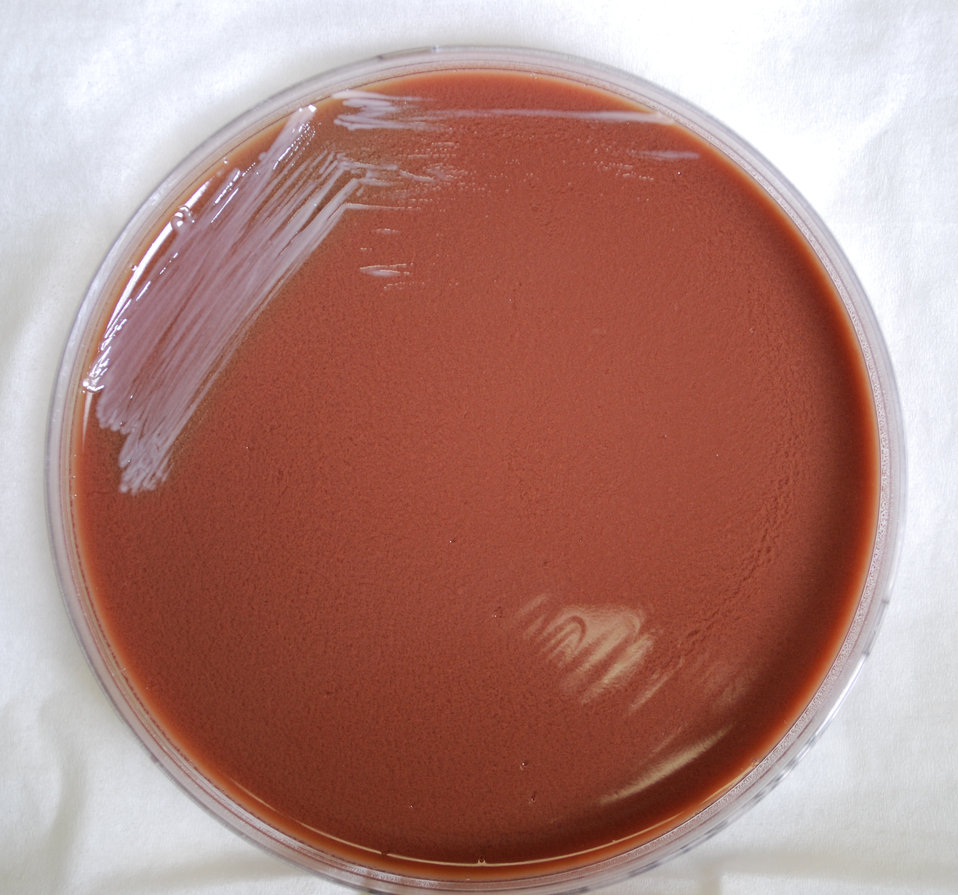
This photograph depicts the colonial morphology displayed by Gram-negative Burkholderia mallei bacteria, which was grown on a medium of chocolate agar, for a 24 hour time period, at a temperature of 37�C. See PHIL 12250, for a closer view of these bacterial colonies.What is glanders?